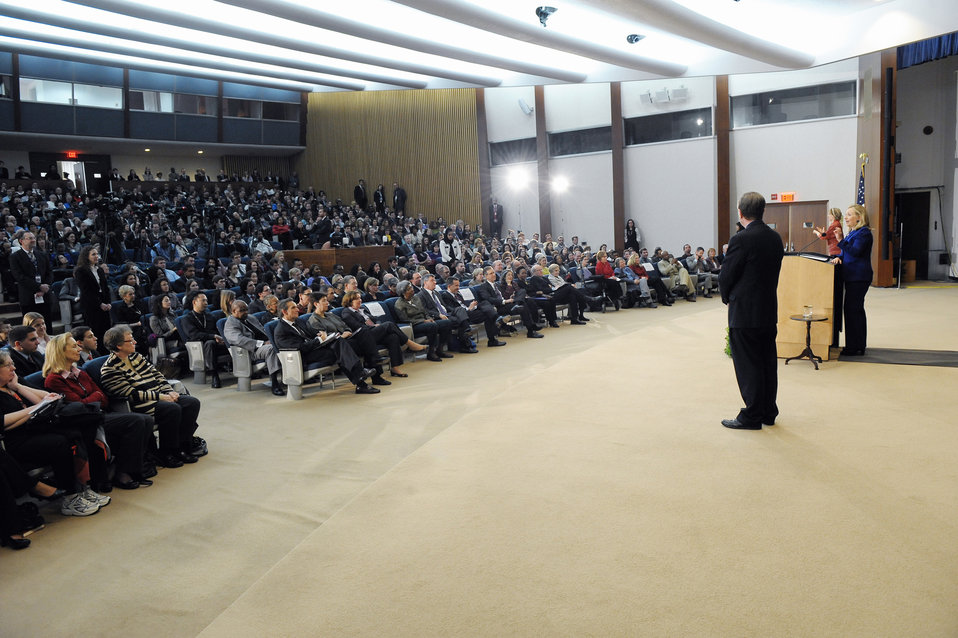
Secretary Clinton Holds a Town Hall Meeting at the Department of State

U.S. Secretary of State Hillary Rodham Clinton holds a town hall meeting at the Department of State in Washington, D.C. on January 26, 2012.